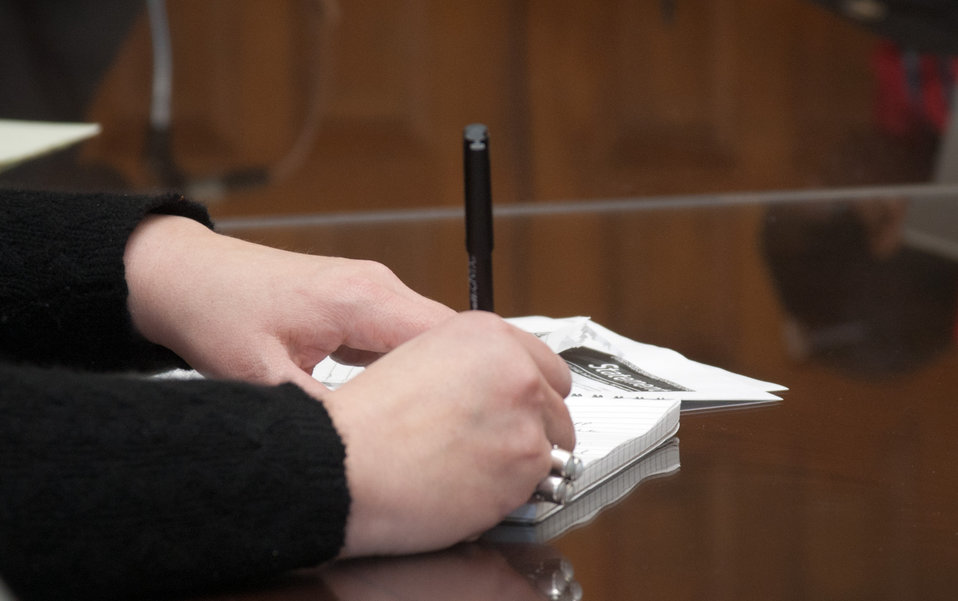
Journalists took notes during Agriculture Secretary Tom Vilsack's briefing to the news media on how the U.S. Department of Agriculture actions will support President Barrack Obama’s proposed budget, Monday, Feb.14, 2011, in Washington, D.C. In an effort to promote good government and streamline agency operations, a host of programs have been selected for reduction or termination. Secretary Vilsack said, “In the end we must cut to grow. And we are working to do it as responsibly as possible for American Agriculture and the American people.”